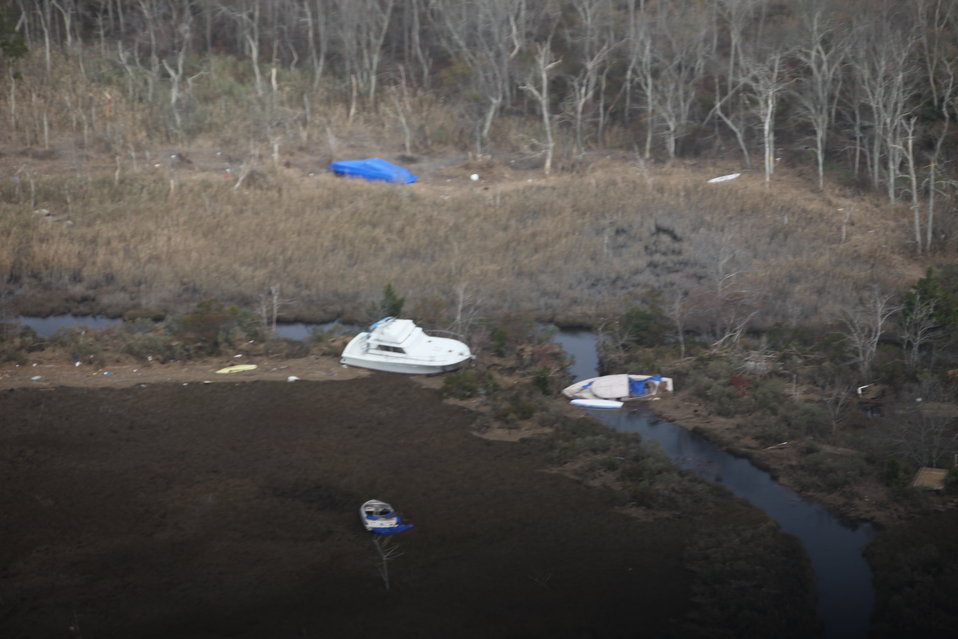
Boats washed ashore on Edwin B. Forsythe National Wildlife Refuge (NJ)

Aerial photo of E.B. Forsythe National Wildlife Refuge taken on 11/2/12.